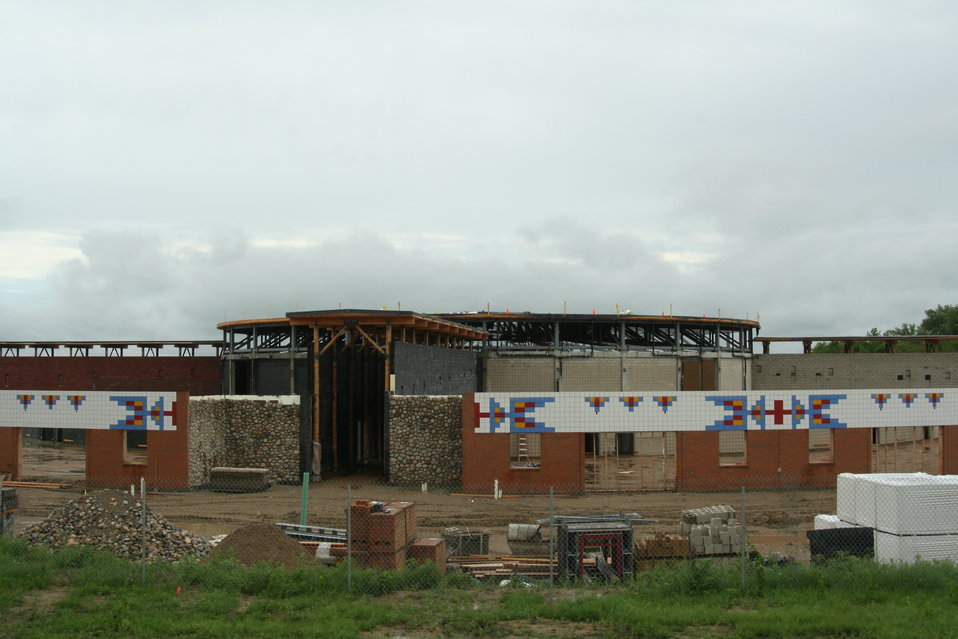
admbldg

This is the Sisseton Wahpeton Oyate Tribe’s current Administration Building on the Lake Traverse Reservation on June 21, 2012. The Sisseton Wahpeton Oyate Tribe has received a U.S. Department of Agriculture (USDA) Rural Development (RD) Community Facility Loan to construct a new building to be completed in June 2013. USDA photo.isseton Wahpeton Oyate Tribal Administration Building